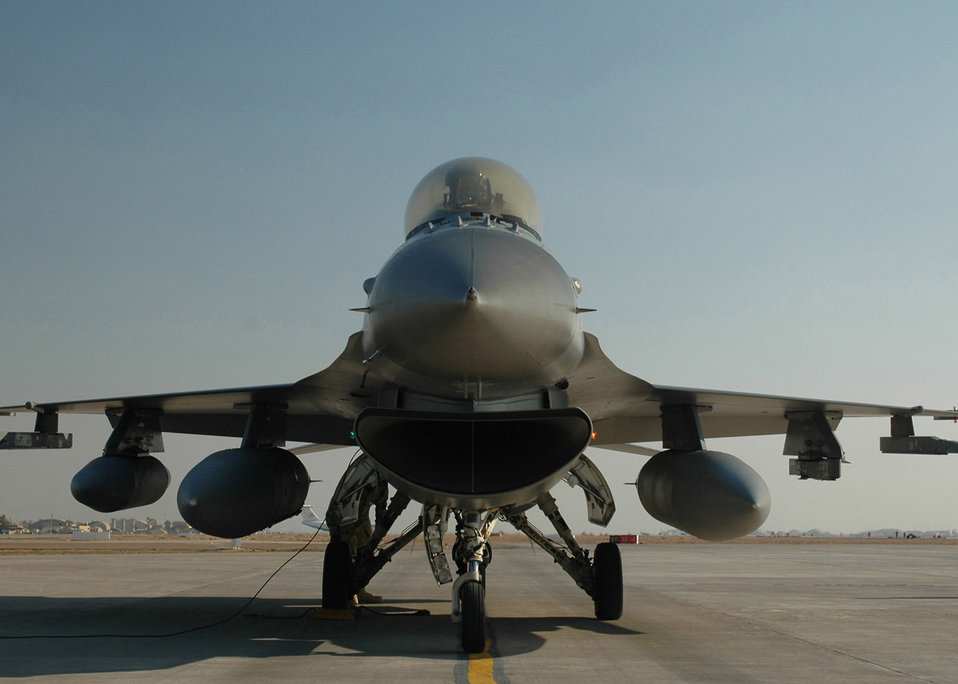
Airpower summary for Jan. 15, 2008

An Air Force F-16 Fighting Falcon at Balad Air Base, Iraq, waits for its next mission.